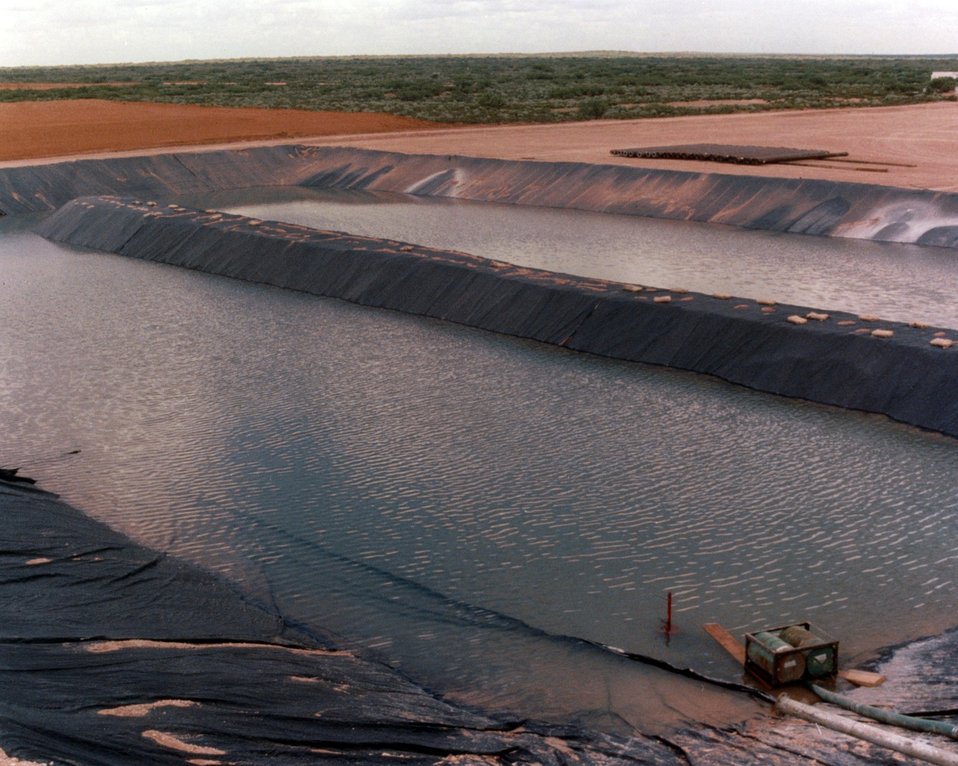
CONSTRUCTION OF THE BRINE SETTLING POND FOR RECIRCULATING THE BRINE-BASED DRILLING FLUID.

DURING SHAFT SINKING, A BRINE BASED DRILLING FLUID FROM THIS POND WILL BE CONTINUOUSLY CIRCULATED TO SUSTAIN DRILLING. THE FLUID WILL CARRY THE ROCK CUTTINGS FROM THE HOLE TO THE SURFACE AND INTO THIS POND VIA A DUAL STRING PIPE. THE LARGER PIECES OF ROCK CUTTINGS WILL SETTLE TO THE BOTTOM OF THE POND ON THE 'DIRTY' SIDE AND THE CLARIFIED DRILLING FLUID WILL BE SKIMMED FROM THE 'CLEAN' SIDE OF THE POND AND RECIRCULATED TO THE DRILLING HOLE. THIS DRILLING FLUID POND IS APPROXIMATELY 200 FEET BY 300 FEET BY 7 AND 1/2 FEET DEEP. THE BERM RUNNING DOWN THE CENTER IS ABOUT 10 AND 1/2 FEET HIGH. TO BRING THE DRILLING FLUID UP TO THE REQUIRED FUNCTIONAL DEPTH OF 3 FEET, APPROXIMATELY 1,323,000 GALLONS OF BRINE WHERE TRUCKED TO THE SITE FROM 2 BRINE WELLS NEAR CARLSBAD.